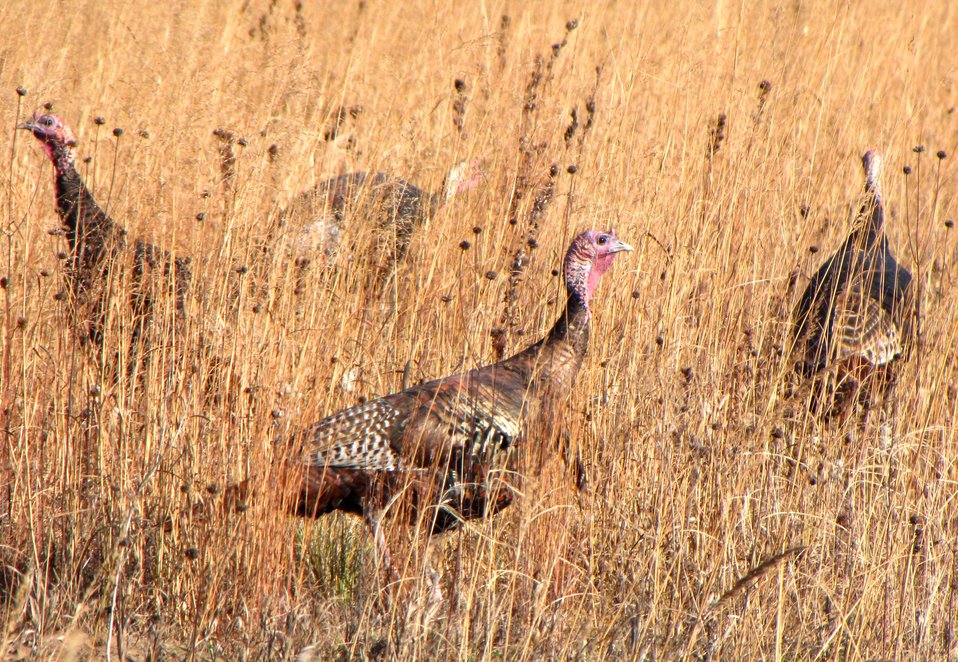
Wild Turkeys